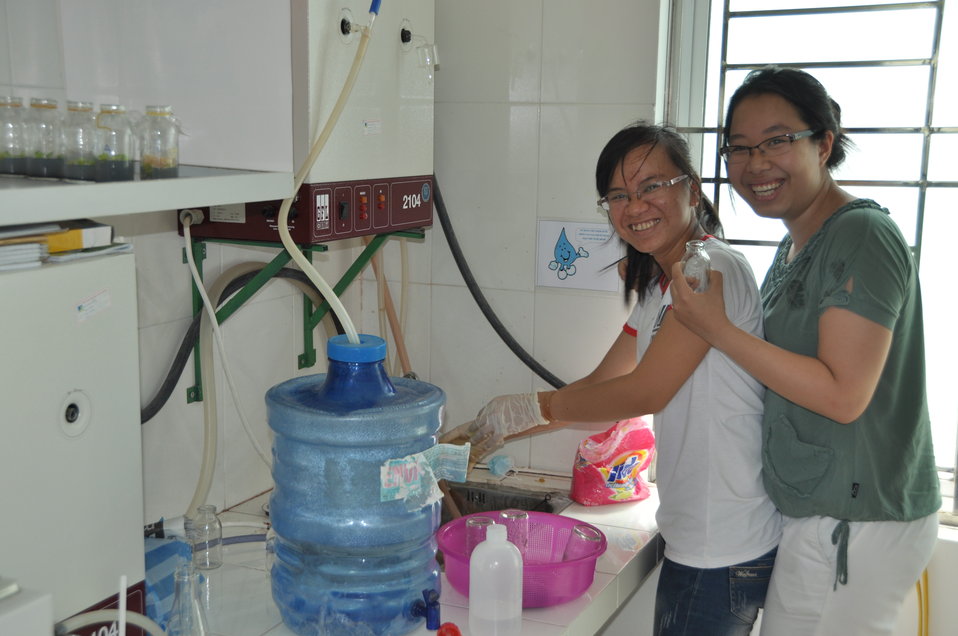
USAID Mission Director visits Danang University of Technology

Danang, July 17, 2013